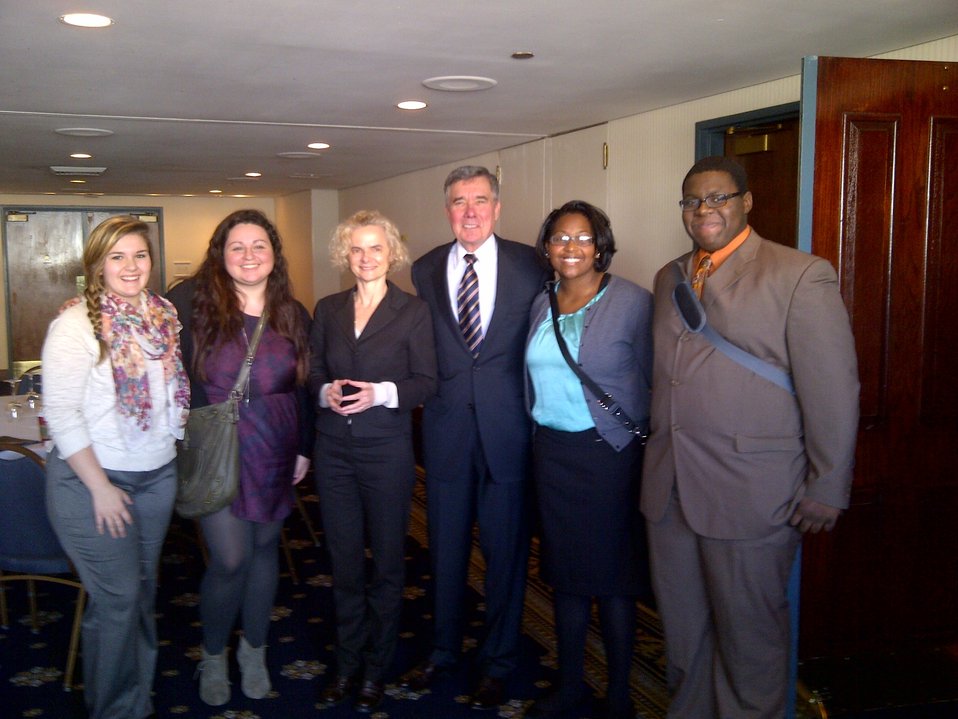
L to R: Mary Hill; Kim Norris; Dr. Volkow; Gil Kerlikowske; Danielle Rollins; Everett Grayson